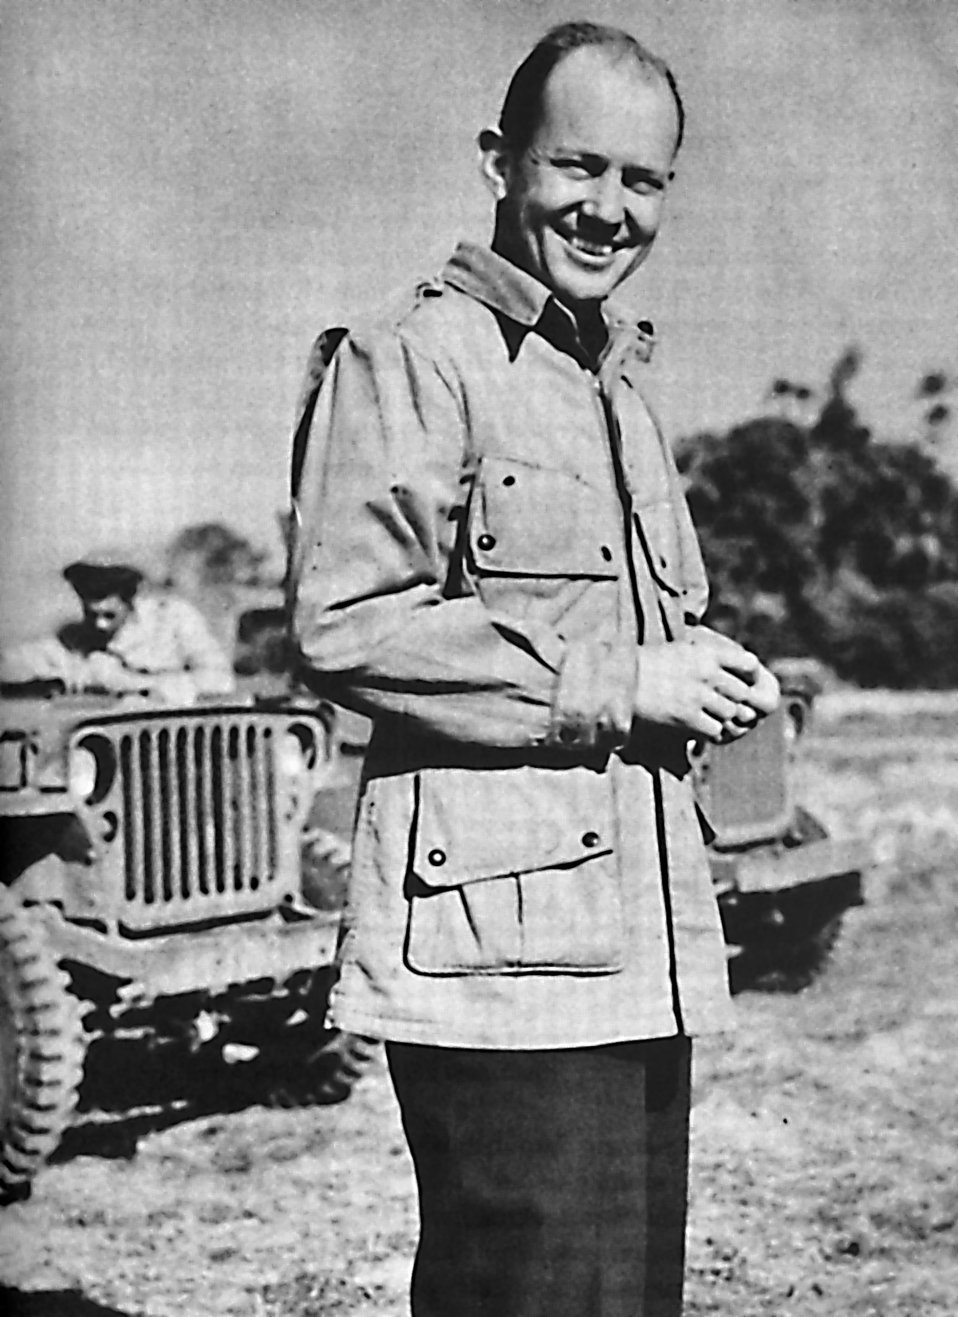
General Alison

Maj. Gen. John Alison, unknown date.